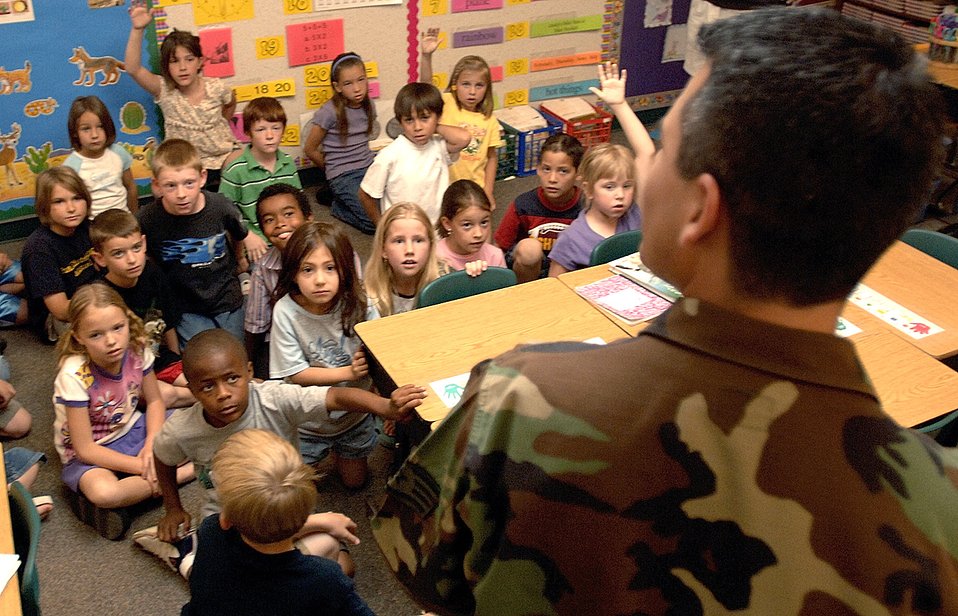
Luke Airmen share environmental innovation

Staff Sgt. Milo Munoz hands out recycling bags to children at Palm Valley Elementary School in Phoenix, Ariz., on Thursday, April 20, 2006. Sergeant Munoz, a crew chief with the 308th Aircraft Maintenance Unit at nearby Luke Air Force Base, volunteers to help promote Air Force environmental programs.